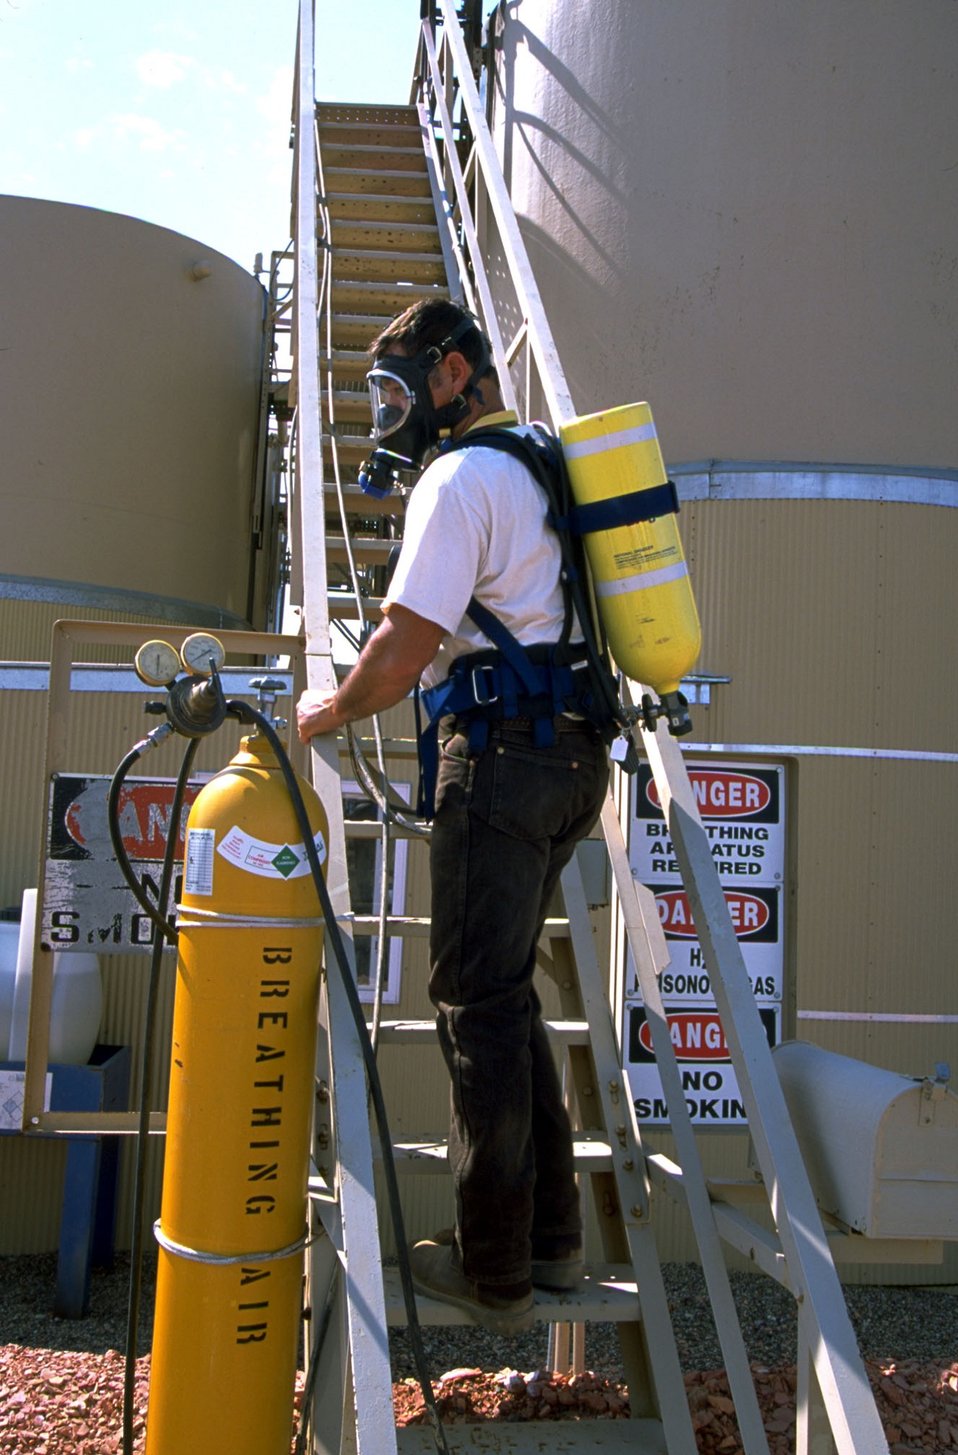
Petroleum Engineer Technician wearing breathing gear at tank battery